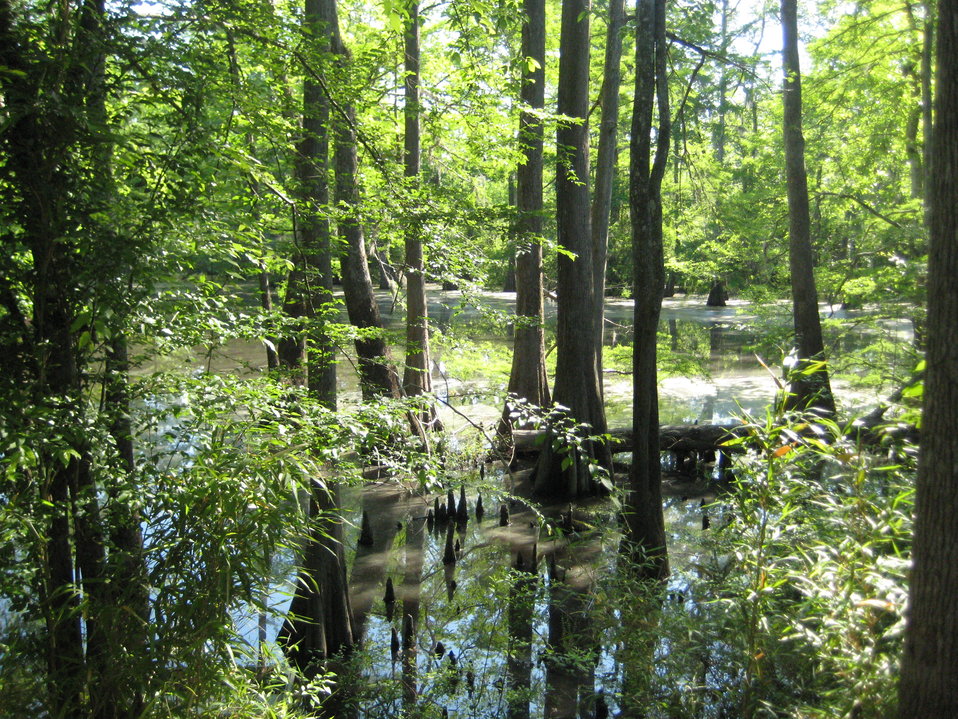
Dearman Starr Lake

Herman Murrah Preserve. Supported by the North American Wetlands Conservation Act.